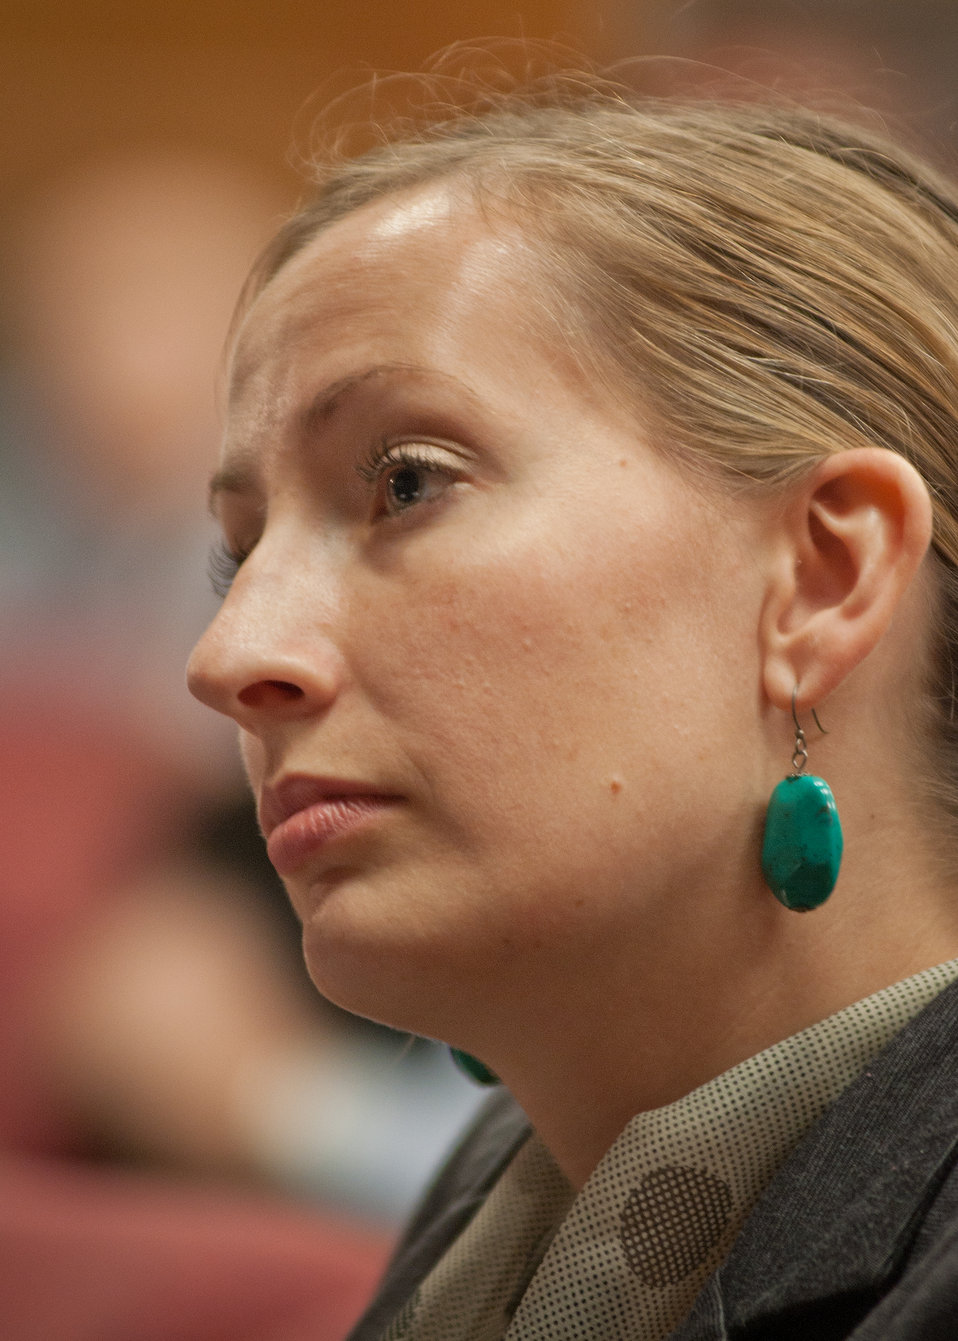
Katie Yocum, Deputy, Chief of Staff for Deputy Under Secretary Cheryl Cook, Rural Development listens to recordings of retiring employees reflecting on their accomplishments during their tenure with the agency, at the Rural Development Celebration of Service held at the United States Department of Agriculture in Washington, DC, on Wednesday, November 16, 2011.